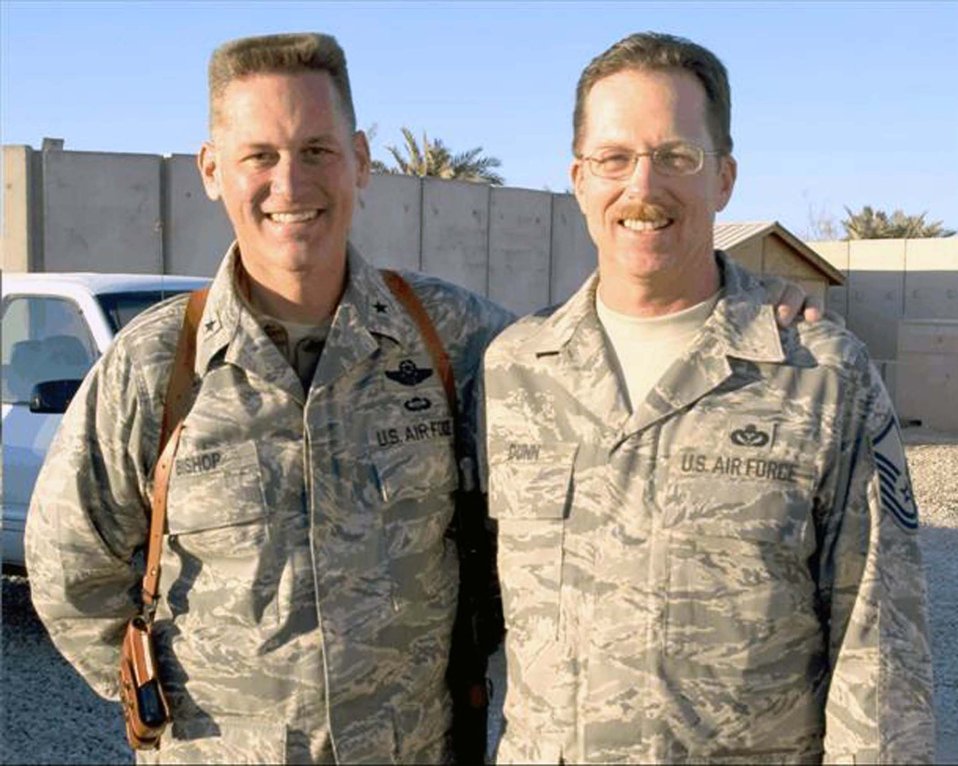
From one sandbox to another

Brig. Gen. Brian Bishop, 332nd Air Expeditionary Wing commander at Joint Base Balad, Iraq, and Master Sgt. Jeffrey Dunn, 407th Expeditionary Civil Engineer Squadron horizontal section chief at Ali Base, Iraq, pose in another